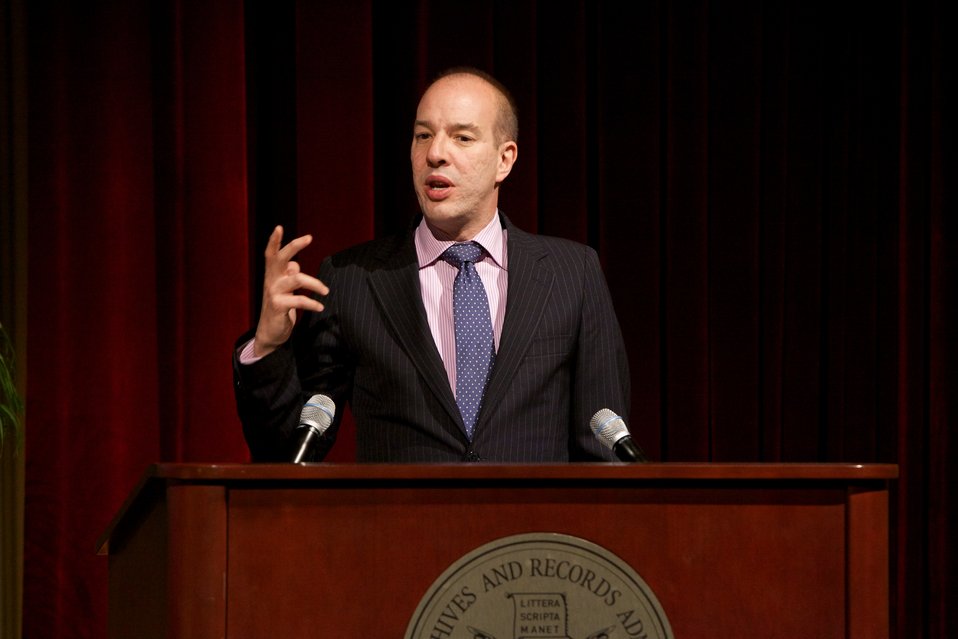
Brown at 60: Is Full Equality Within Our Grasp? A Conversation on Zero Tolerance, Segregation, and the Promise of Justice